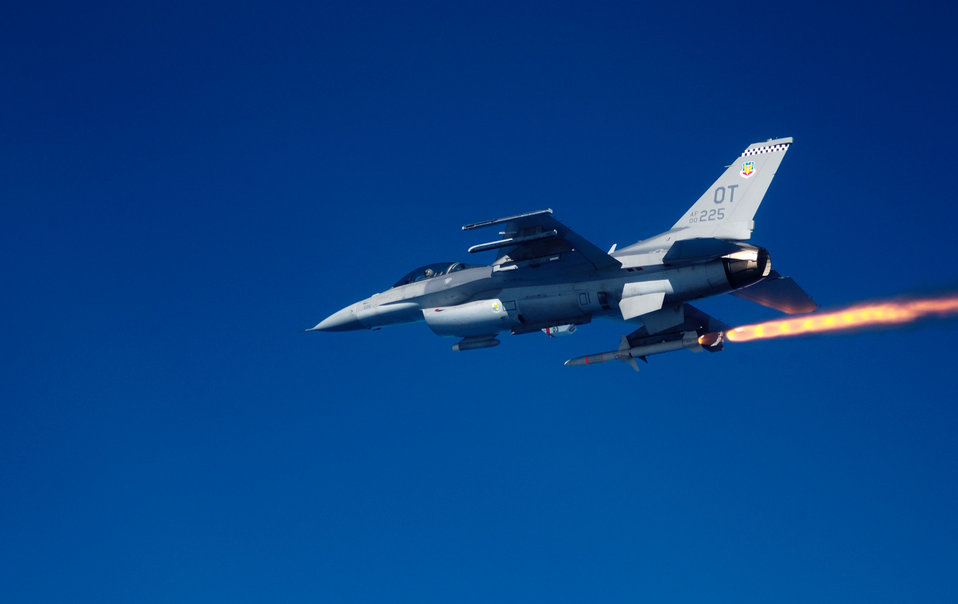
HARM firing

EGLIN AIR FORCE BASE, Fla. -- Capt. Thomas Seymour, an F-16C Fighting Falcon pilot assigned to the 86th Fighter Weapons Squadron here, fires an AGM-88 high-speed antiradiation missile at a target during a March 24 test mission. The HARM is an air-to-surface missile designed to seek and destroy enemy radar-equipped air defense systems. The F-16 is the only aircraft in the Air Force capable of using the HARM.